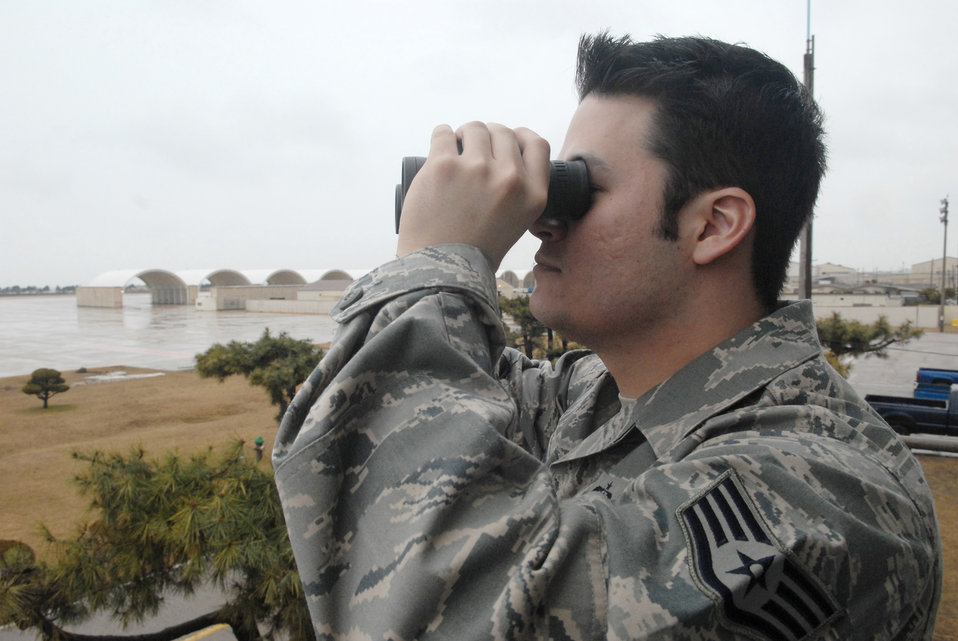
Weather

Staff Sgt. Jack Cotham observes weather conditions on the flight line Feb. 11, 2010 at Kunsan Air Base, South Korea. Sergeant Cothan is a 8th Operation Support Squadron weather forecaster.